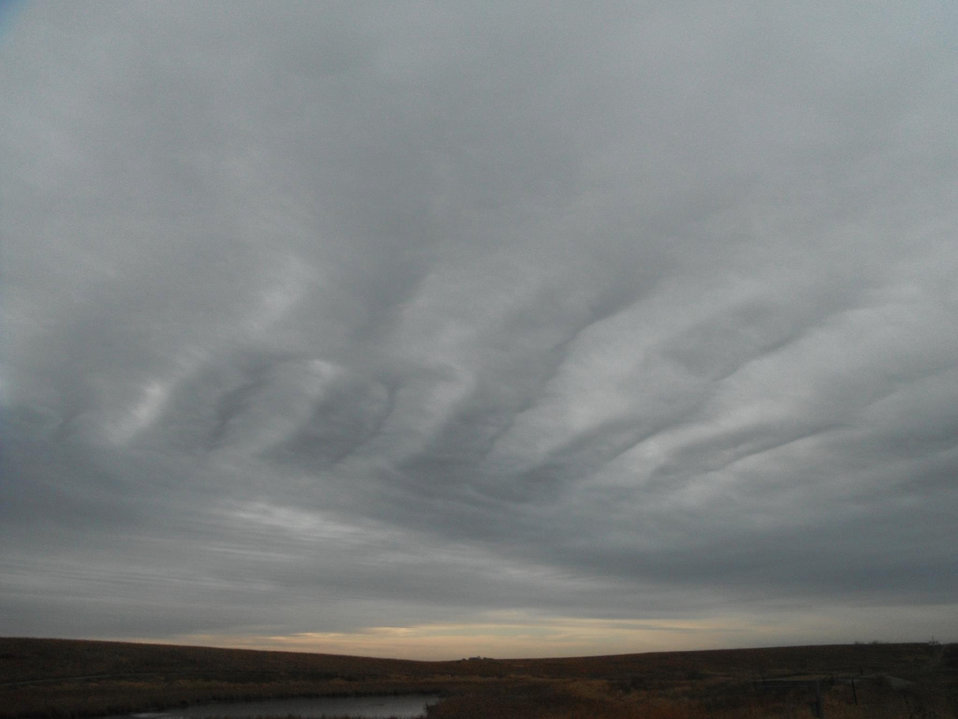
clouds on the prairie

Prairie Wetlands Learning Center
Fergus Falls Wetland Management District, MN
Nov. 19, 2011